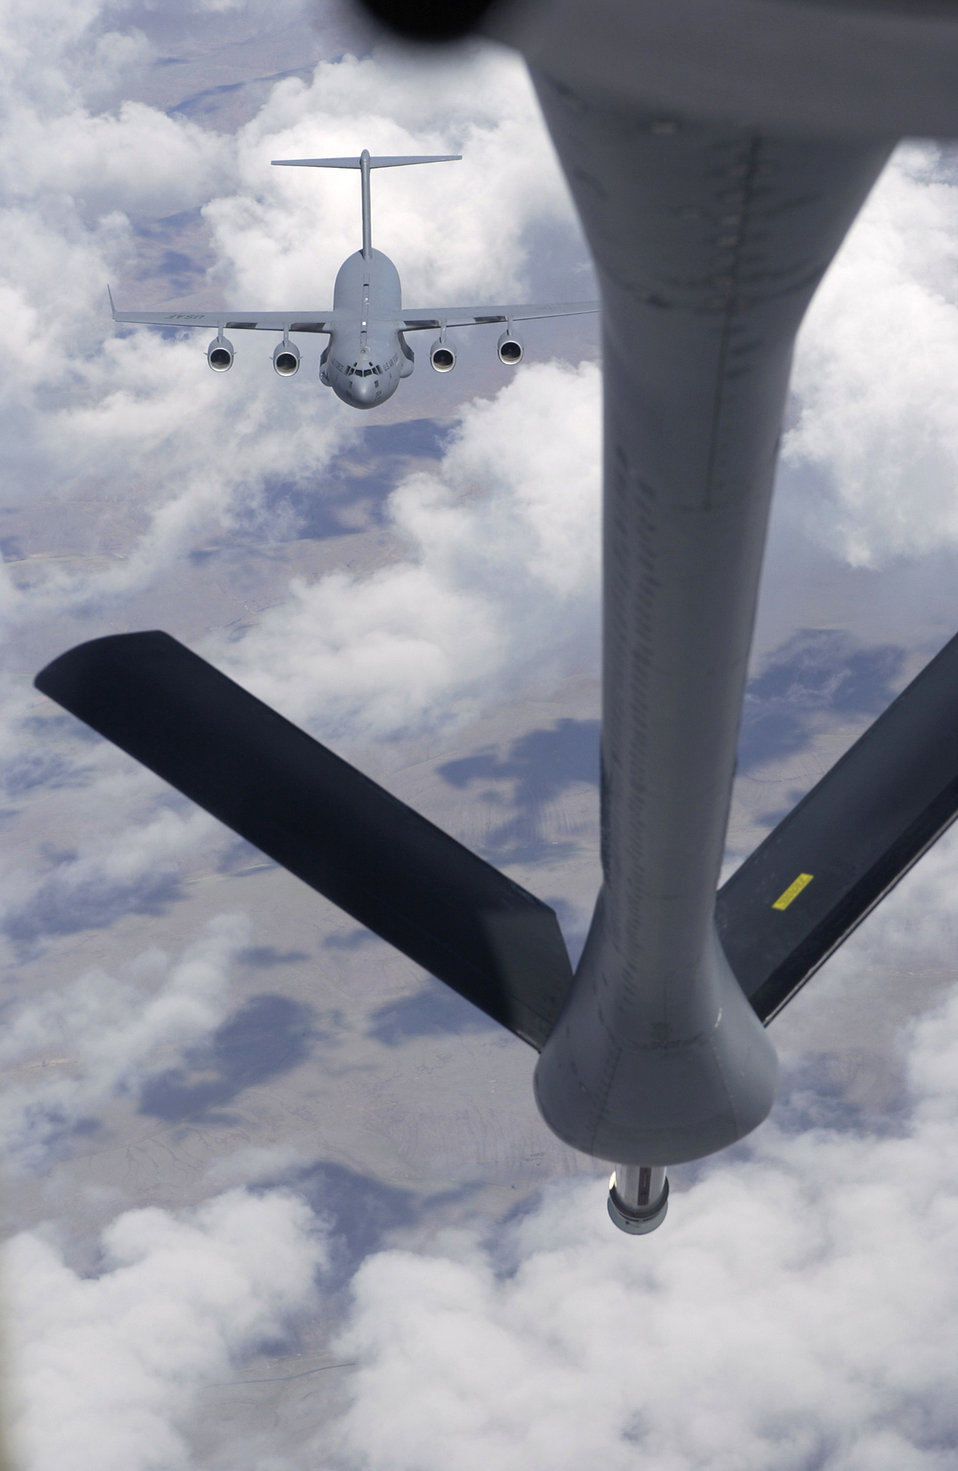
Rodeo 2005

MCCHORD AIR FORCE BASE, Wash. -- A C-17 Globemaster III from Altus Air Force Base, Okla., prepares to receive fuel from a KC-135 Stratotanker assigned to the 22nd Air Refueling Wing at McConnell AFB, Kan., during the June 20 aerial refueling competition at Rodeo 2005.